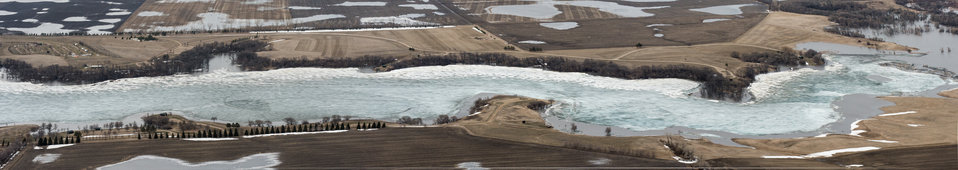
Fordville Dam in Grand Forks County, ND, part of the Red River basin, on Wednesday, May 1, 2013. To learn about the Red River Basin Initiative, see www.mn.nrcs.usda.gov/news/features13/RRBI.html.